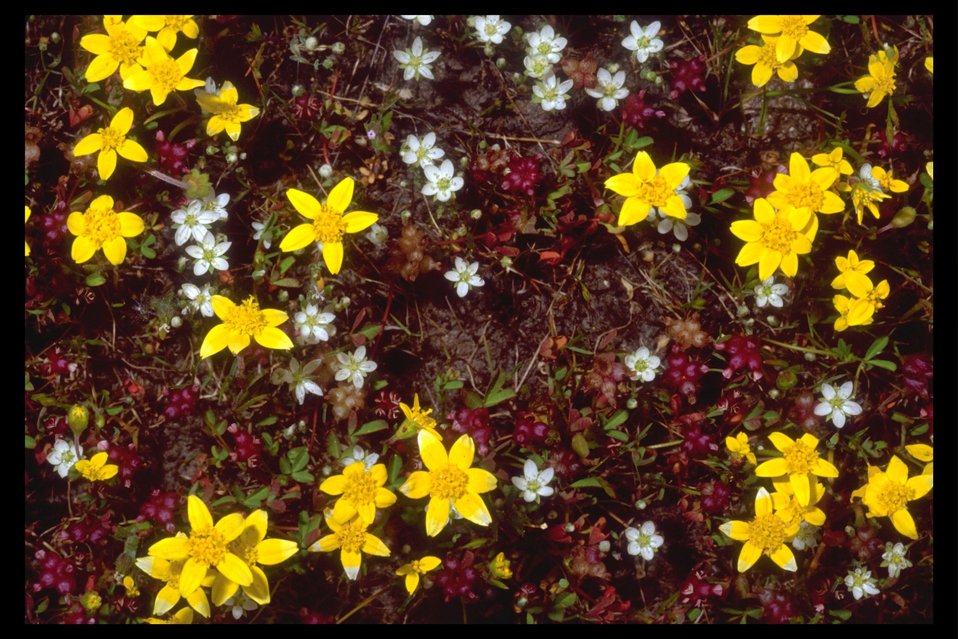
Goldfields (Lasthenia californica) located near Lower Table Rock.